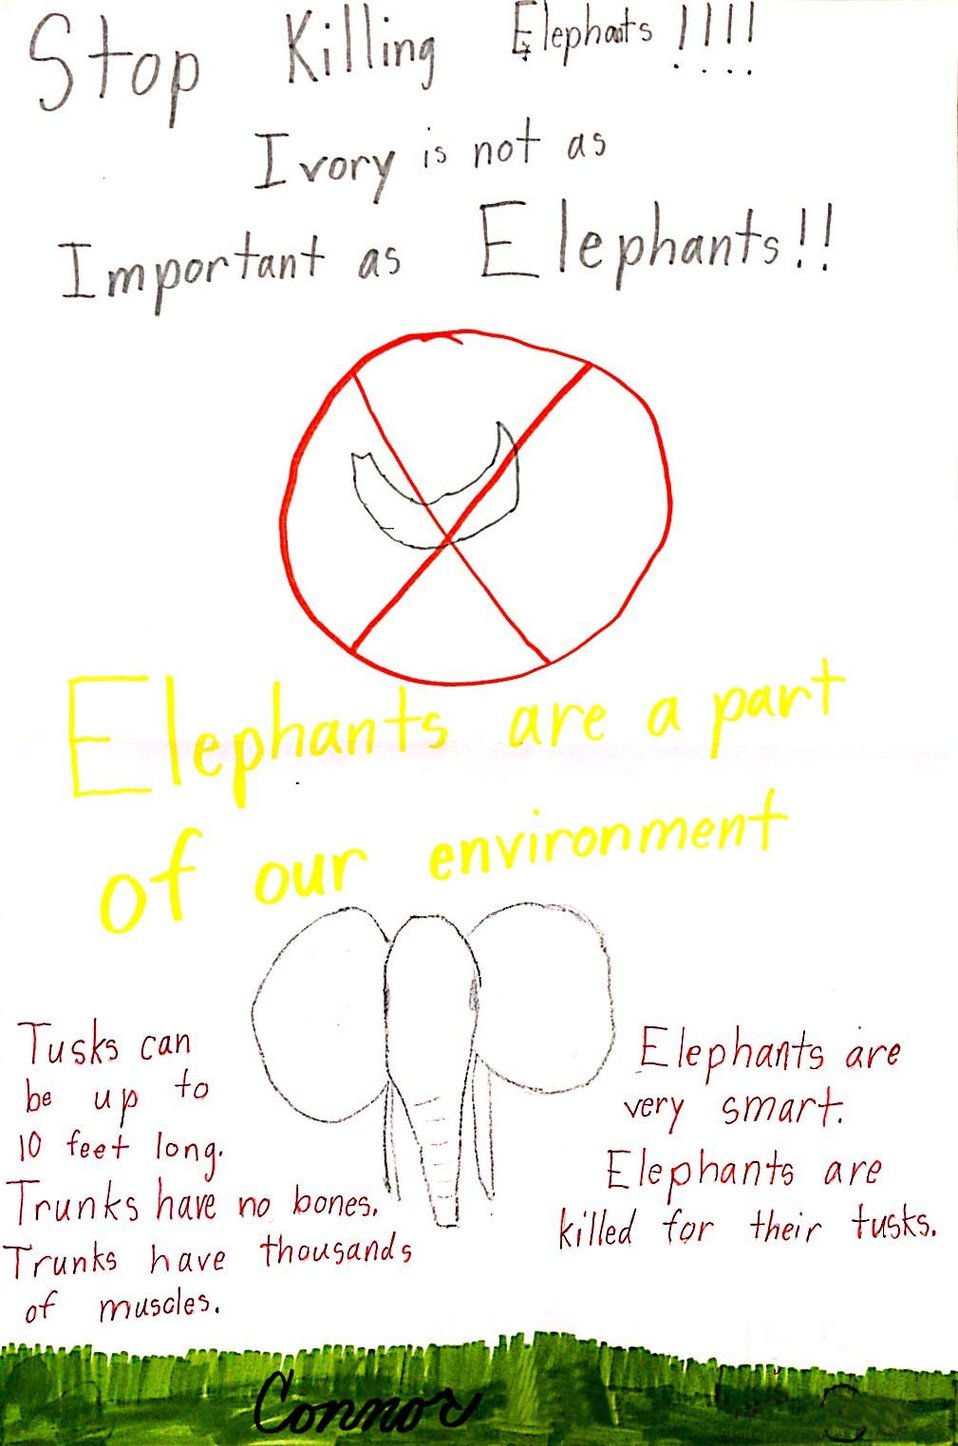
Drawing by Connor